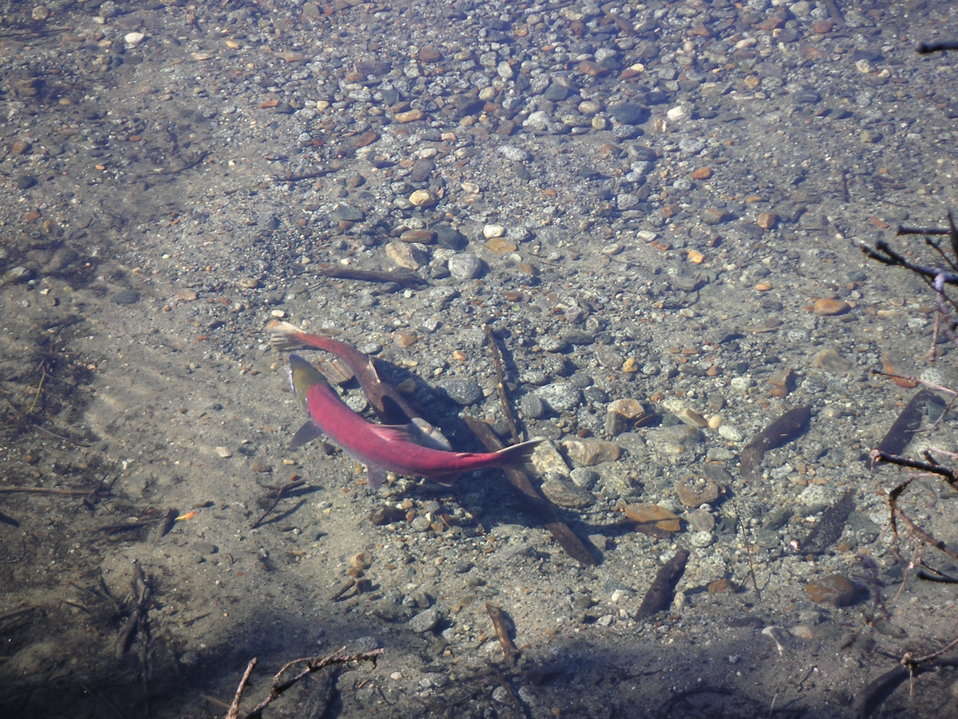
guarding nest

Sockeye salmon guarding their redd, or gravel nest.